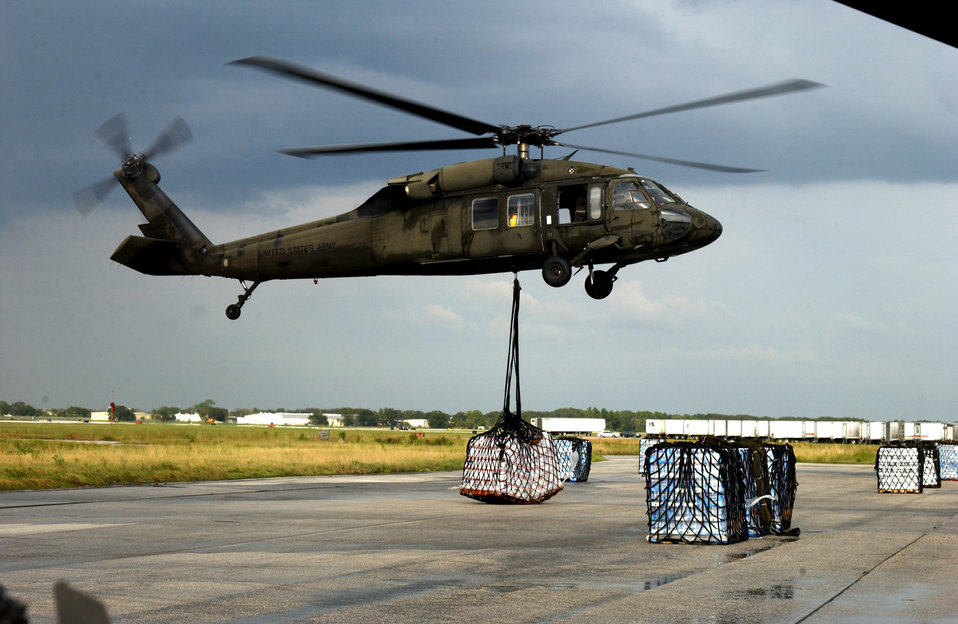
Turning back

LAKELAND, Fla. -- A UH-60 Blackhawk from the Alabama National Guard returns to Lakeland Linder Airport after being diverted by an ominous summer storm here Sept. 9. The Blackhawks have been transporting supplies to areas of Florida affected by Hurricane Frances.